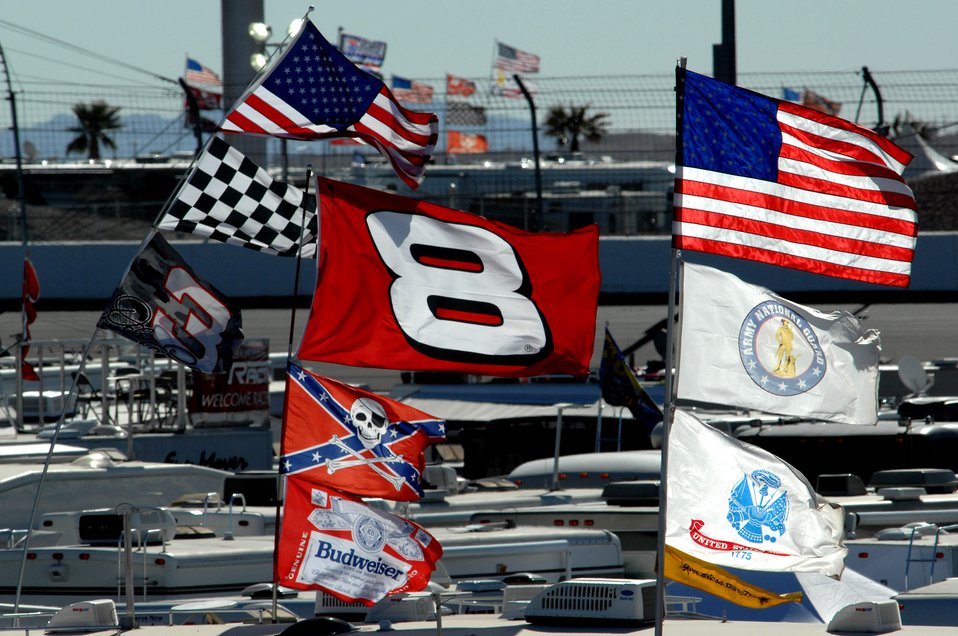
NASCAR Nextel Cup UAW Daimler-Chrysler

Flags are proudly displayed March 11 at Las Vegas Motor Speedway during the NASCAR Nextel Cup UAW Daimler-Chrysler 400.